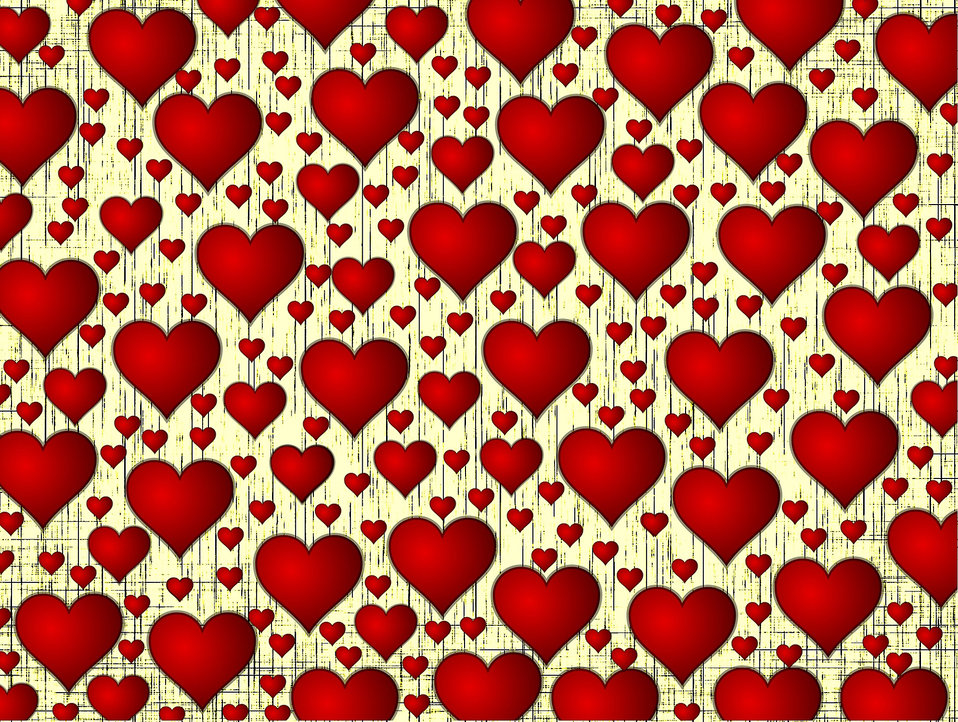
Hearts 3

Background.